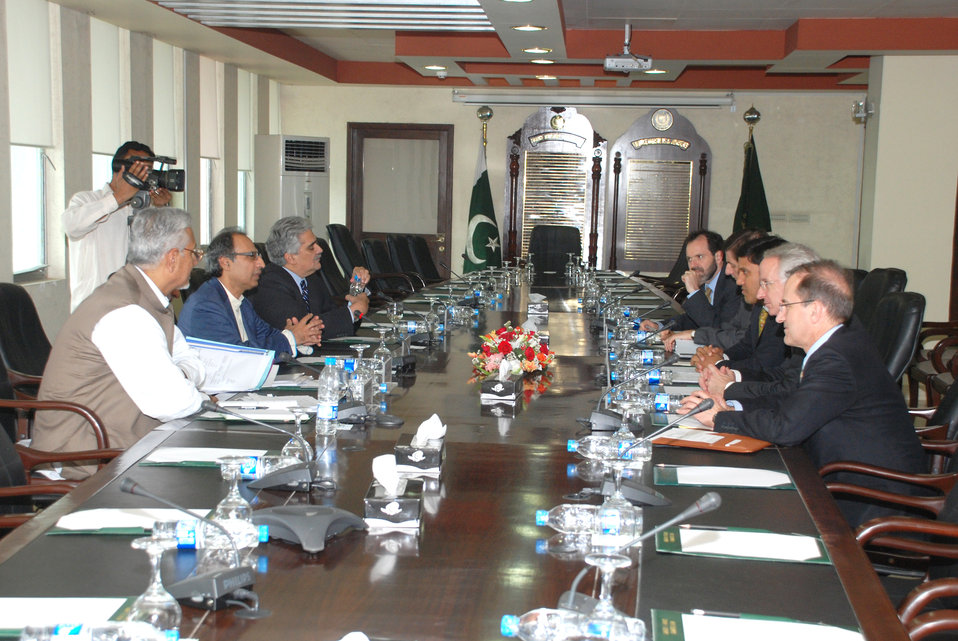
USAID and Pakistan Working Together to Promote Growth, Prosperity at Islamabad on April 13, 2012

Dr. Rajiv Shah (USAID) met with Finance Minister Hafeez Shaikh at the Ministry of Finance. The two discussed the important role economic assistance brings to the bilateral relationship, and how U.S. civilian assistance can create jobs and raise incomes for more Pakistanis.